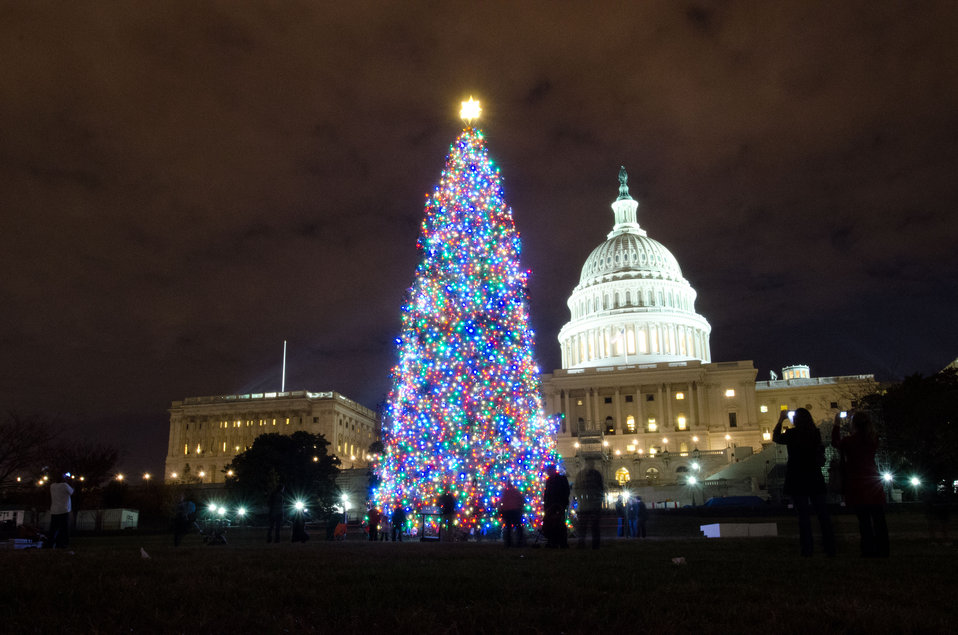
The lights of the 2012 U.S. Capitol Christmas Tree from the Blanco Ranger District of the White River National Forest near Meeker, CO; and decorated with hand-made ornaments, was switched on by Colorado Springs high school student Ryan Shuster and House Speaker John Boehner, on Tuesday, Dec. 4, 2012 at the U.S. Capitol in Washington, D.C. Since November, the tree visited dozens of cities across the country as it made its way arriving here on Nov.26, 2012. The 73-foot Englemann spruce traveled from the White River National Forest in Colorado. Other representatives as well as Natural Resources and Environment Under Secretary Harris Sherman spoke during the ceremony.